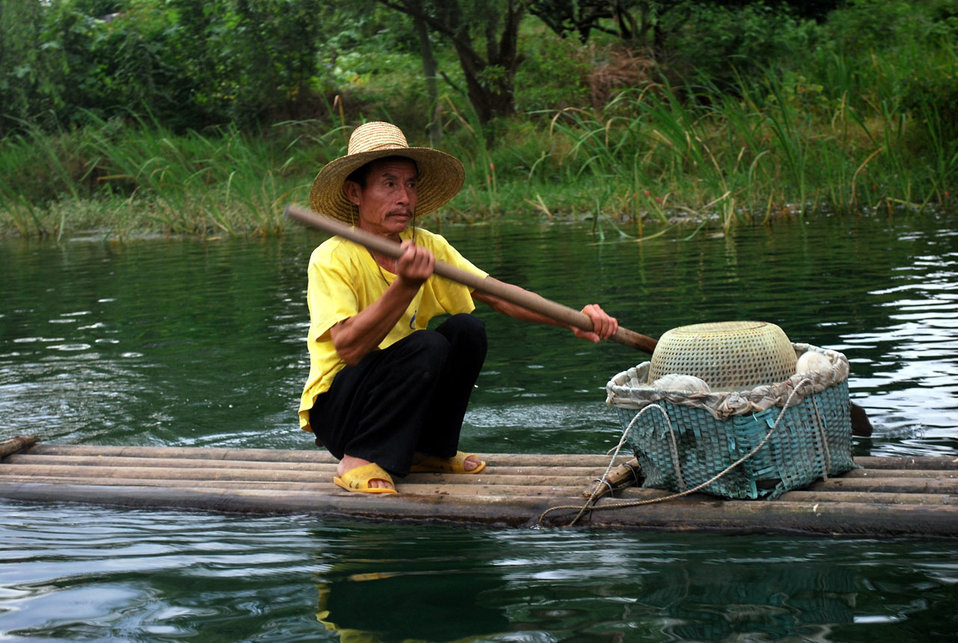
On the water

Fisherman on the water.